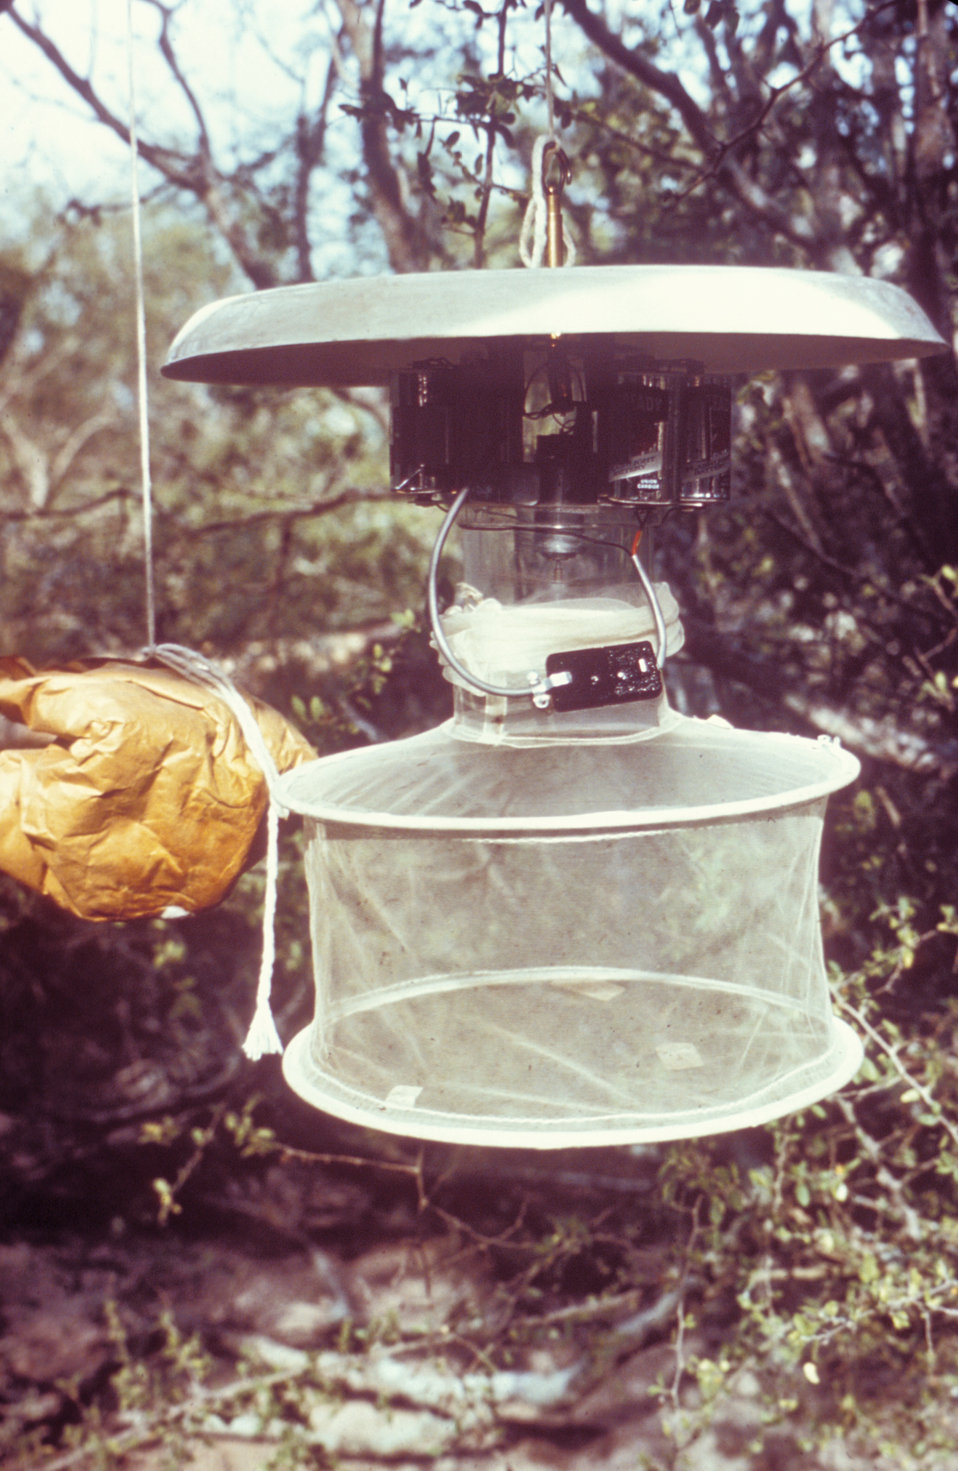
This 1974 photograph shows a CDC light trap used to collect mosquitoes in the field.